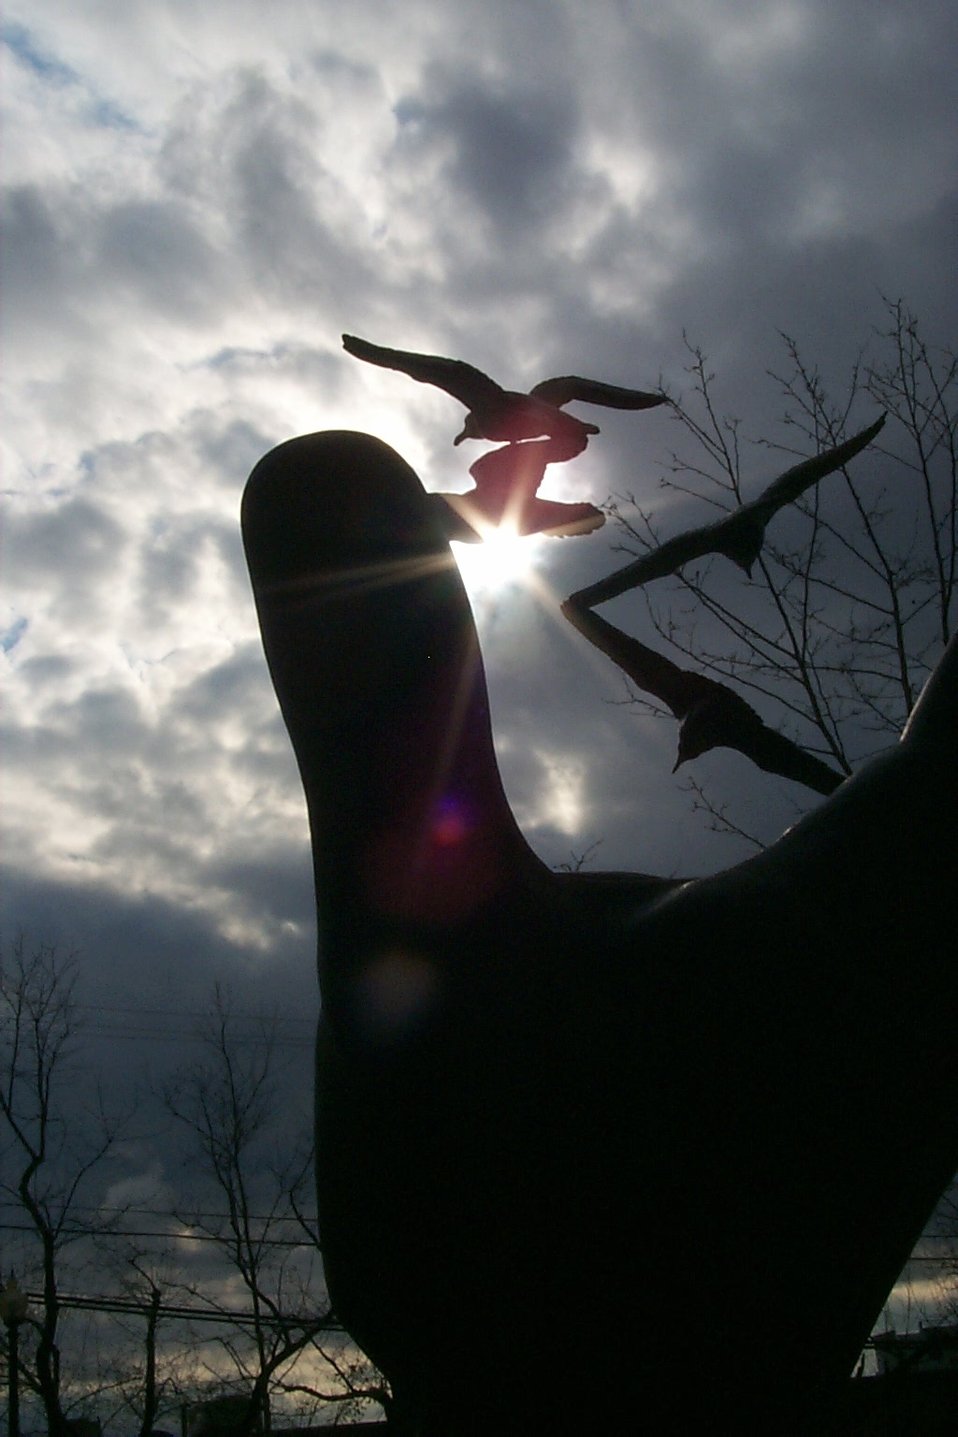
Clouds and sun silhouette the statue symbolizing NOAA's stewardship of the environment at the entrance to a NOAA headquarters building in Silver Spring. This statue was titled 'Hand of Noah' by its sculptor, Raymond Kaskey in 1991.